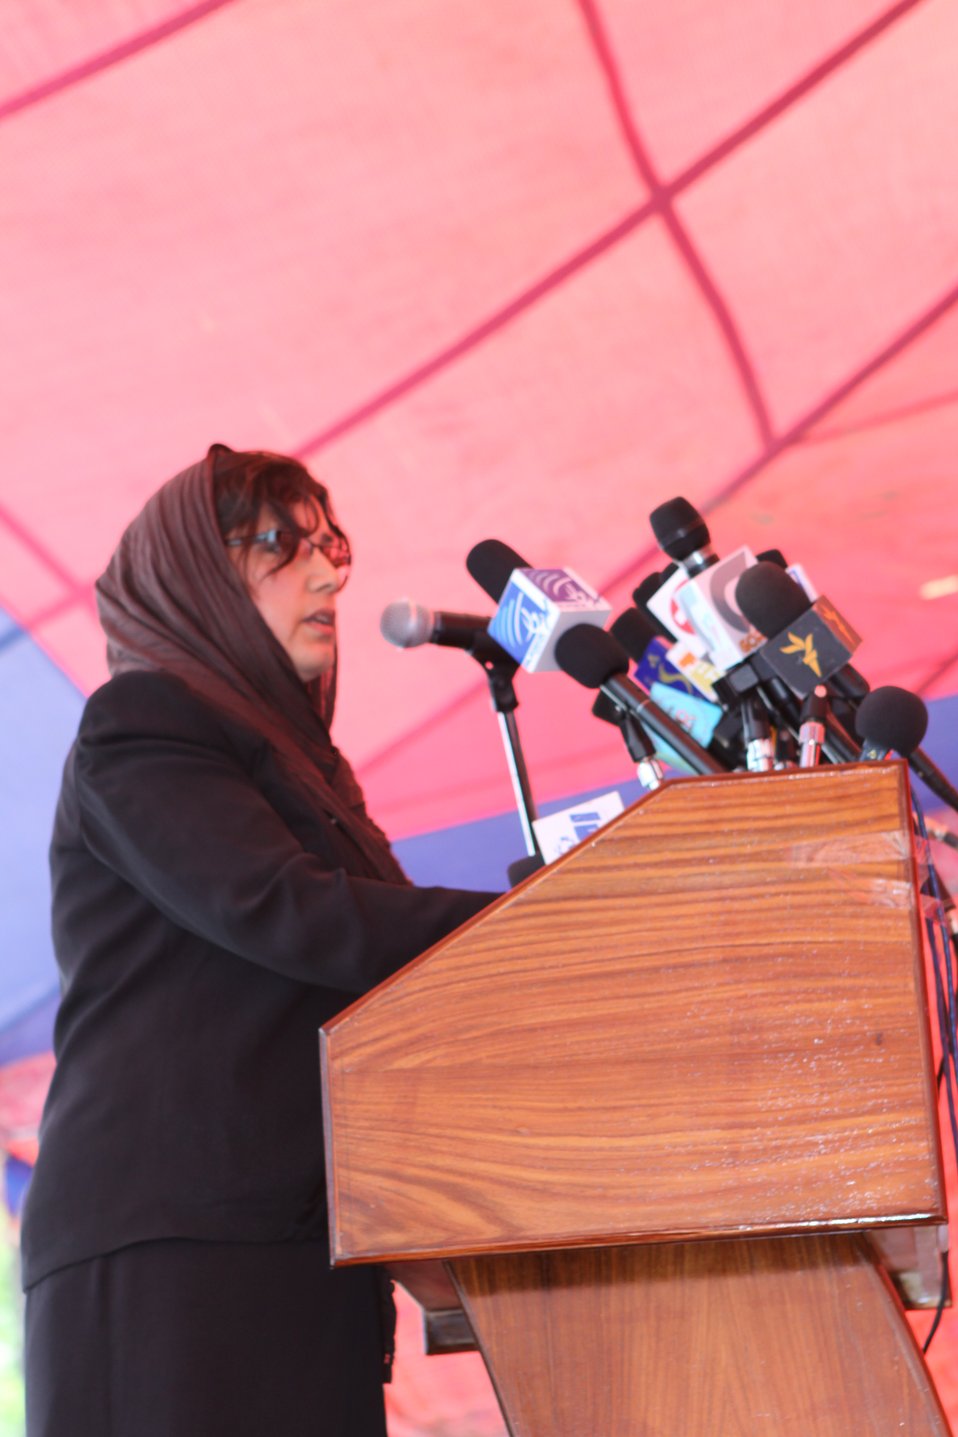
100522 ATVI Graduation 098